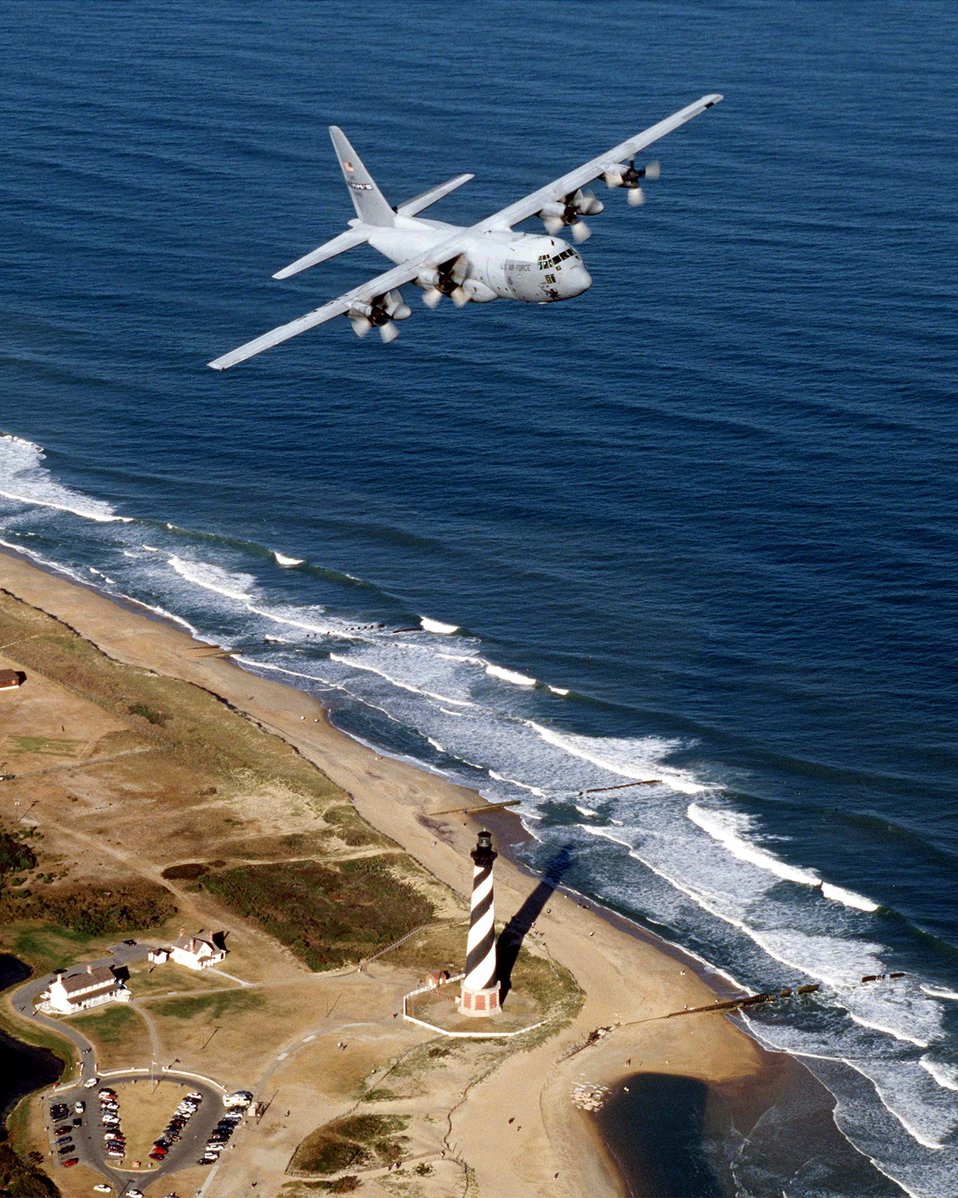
Sea shore

FILE PHOTO -- A C-130E aircraft form the 2nd Airlift Squadron, Pope Air Force Base, N.C. flies over the Cape Hatteras Lighthouse on the North Carolina coast.